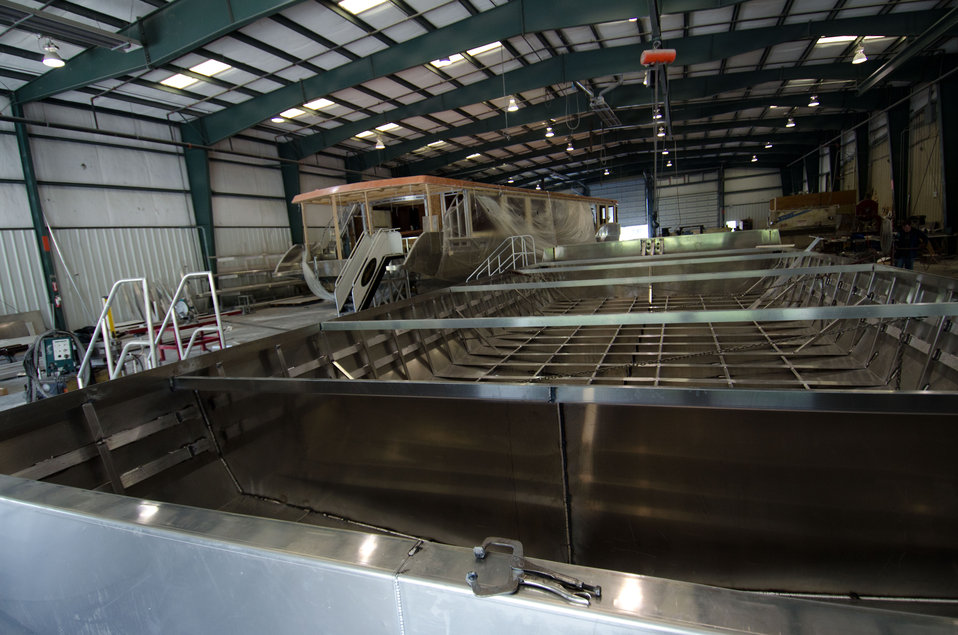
Stardust Industries is using it's expertise in luxury house boats to help retool and redirect Monticello, Kentucky’s houseboat manufacturing industry on Wednesday, July 13, 2011 The houseboat industry has been decimated because of the struggling economy – by using its facilities and manpower to create low-cost housing that is energy efficient. Rural Development obligated $499,000 in Rural Business Enterprise Grant funds to support this unique endeavor. Up until a few years ago, there were several successful houseboat manufacturers in the four-county area surrounding the city of Somerset. Most have now ceased operation or drastically reduced output, which has led to dramatic, long-term job loss. These new energy efficient homes will be constructed in redesigned, refitted houseboat factories using local workers that have been retrained.